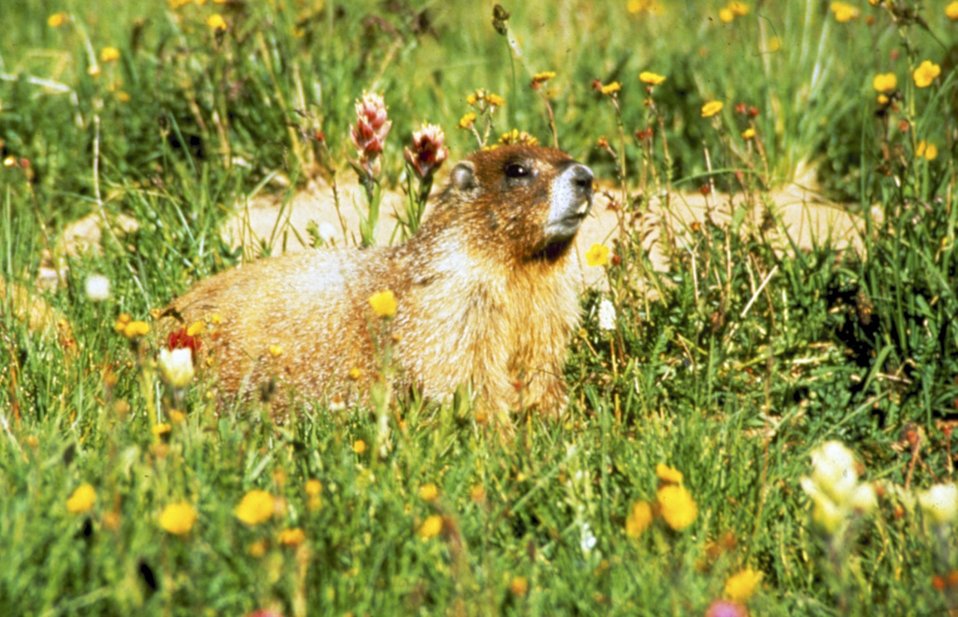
Back Country